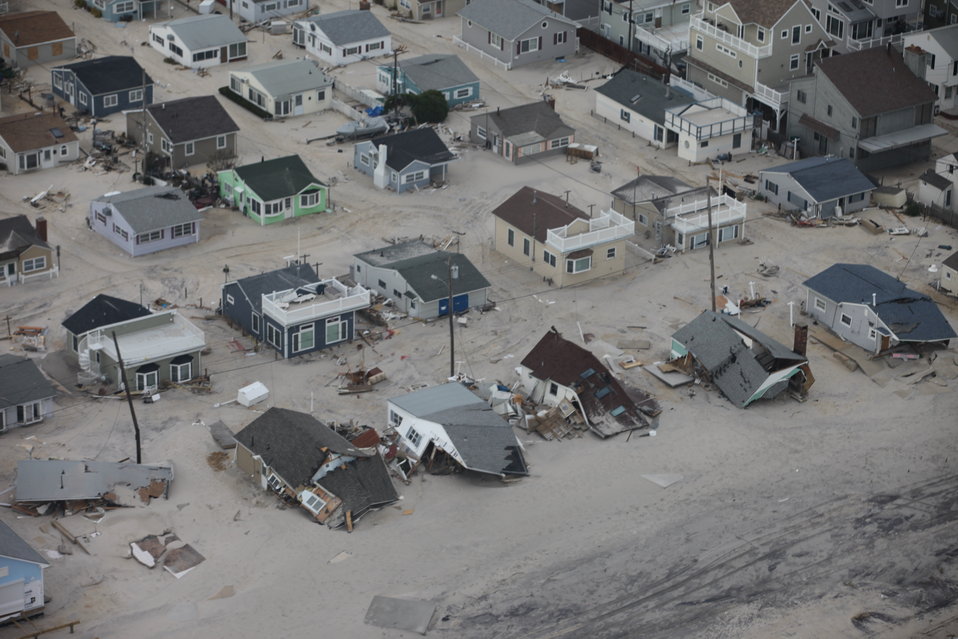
Aftermath of extensive flooding along New Jersey shore

Aerial photo of damaged homes along New Jersey shore after Hurricane Sandy.